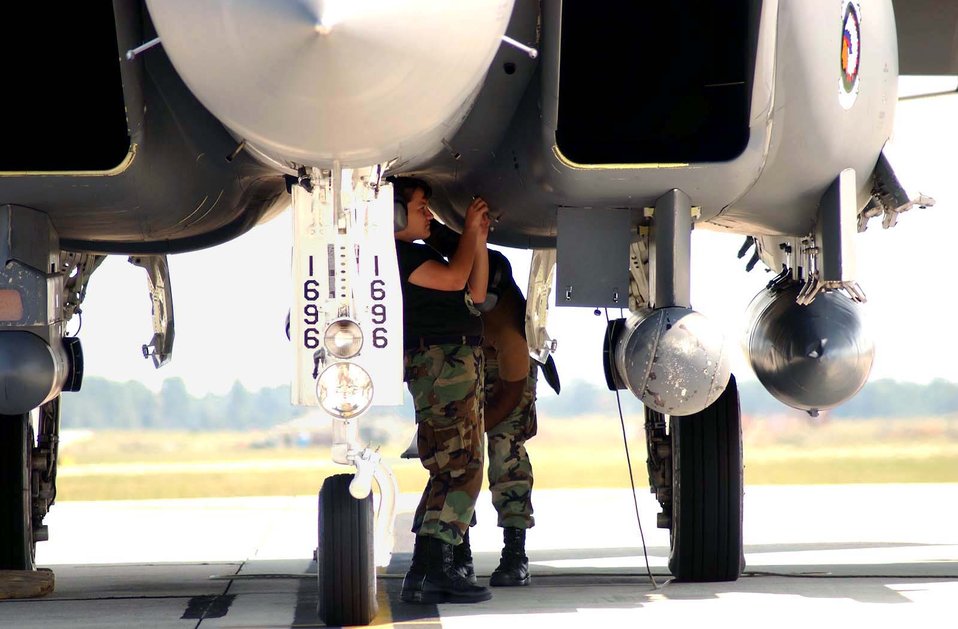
Dauro

SEYMOUR JOHNSON AIR FORCE BASE, N.C. -- Airman 1st Class Jessica Dauro of the 4th Aircraft Maintenance Squadron checks an F-15E Strike Eagle Sept. 16 before the jet is flown to Tinker Air Force Base, Okla. F-15Es here are being evacuated as part of the base's preparation for Hurricane Isabel.